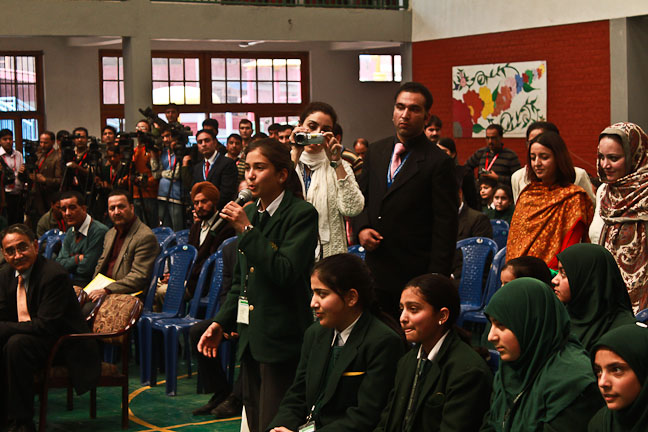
Ambassador Roemer Visits Jammu and Kashmir

U.S. Ambassador to India Timothy J. Roemer visits Jammu and Kashmir, March 17-18, 2011, to engage and listen to the people and connect with the youth of the state.